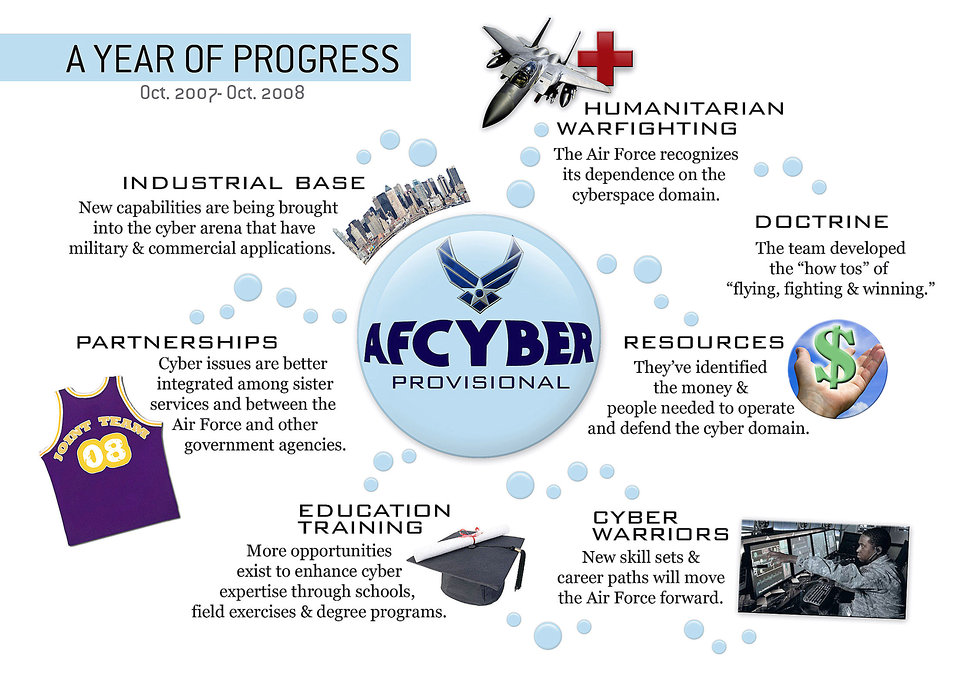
Provisional team prepares for cyber mission assurance

The Air Force Cyber Command (Provisional) staff have spent a year laying the groundwork for how the Air Force will operate in the cyber domain.